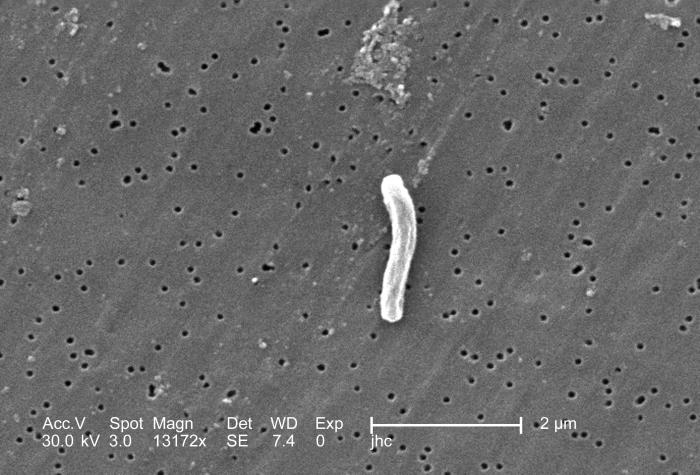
At a magnification of 13172x, this scanning electron micrograph (SEM) depicted a single Gram-positive Mycobacterium tuberculosis bacterium. As an obligate aerobic organism M. tuberculosis can only survive in an environment containing oxygen. This bacterium ranges in length between 2 - 4�m, and a width between 0.2 - 0.5�m.